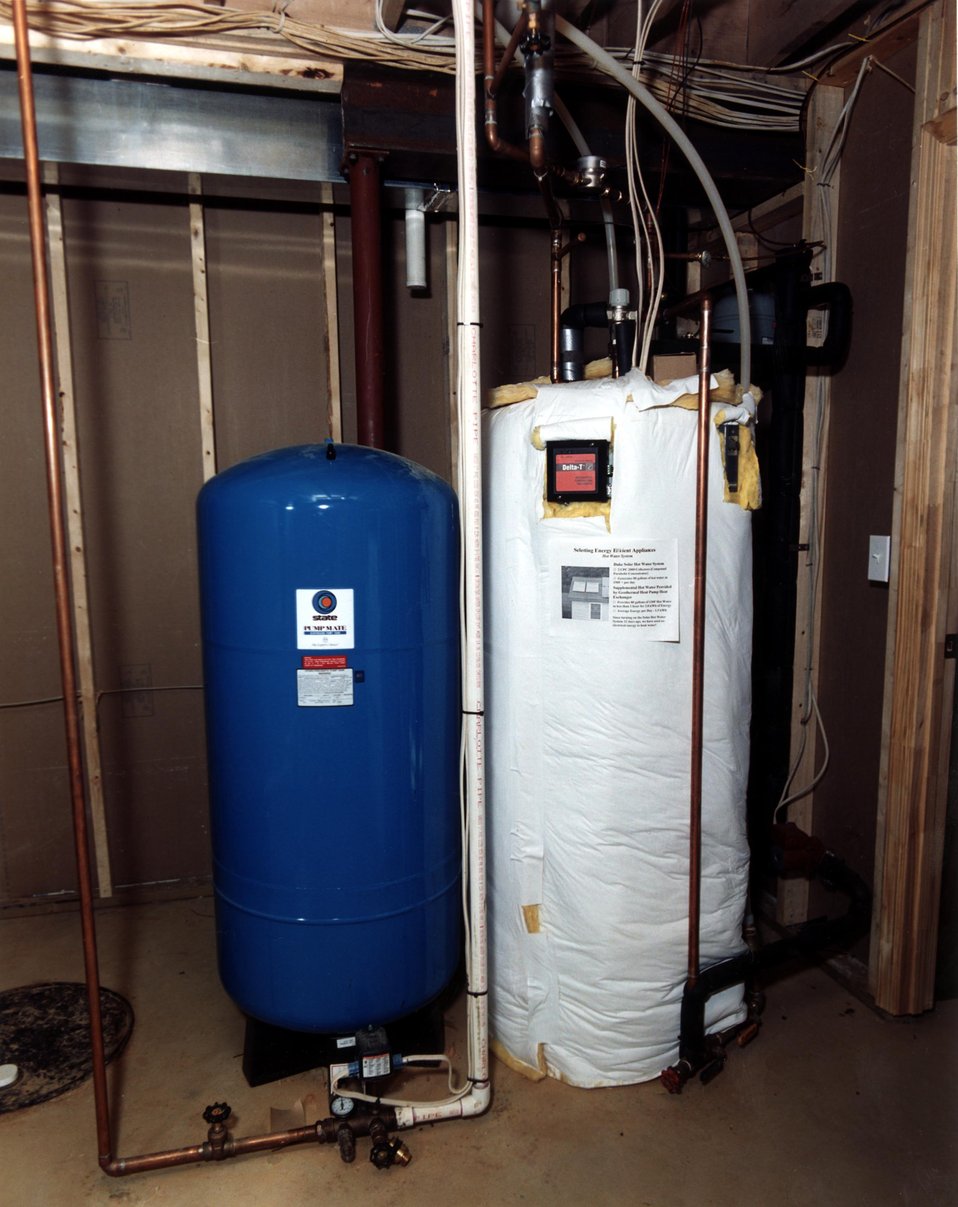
UTILITY ROOM IN THE ZERO ENERGY HOME IN LOUDOUN COUNTY, VIRGINIA.

THE THERMAL PANELS ON THE GARAGE ROOF PROVIDE ENERGY FOR THE WATER HEATER. IF MORE HOT WATER IS NEEDED DURING A PROLONGED DARK SPELL, THE GEOTHERMAL HEAT PUMP CAN HEAT THE WATER. THIS ZERO ENERGY HOUSE THAT COMBINES ACTIVE AND PASSIVE SOLAR TECHNOLOGIES, AND A FREON-BASED GEOTHERMAL HEAT PUMP. POWER NEEDS ARE MET DURING THE DAY WITH ELECTRICITY FROM TWO SETS OF SOLAR PANELS ON THE ROOF. AT NIGHT IT SWITCHES TO THE TOWNSHIP POWER LINES.